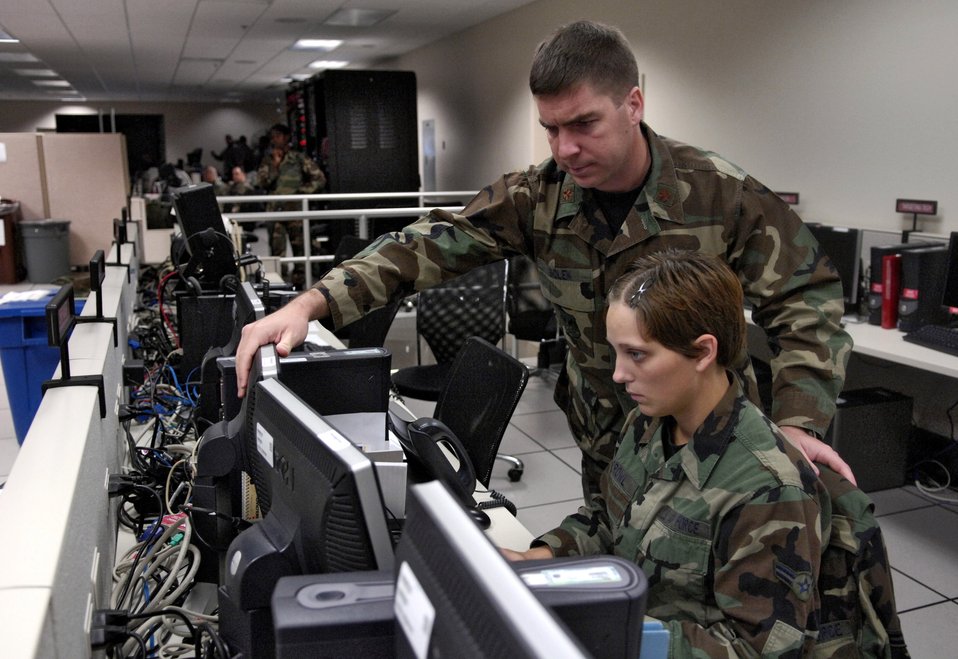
American, Japanese airmen join forces in Keen Edge '07

Maj. Todd Bolen and Airman 1st Class Whitney Sprowl correlate air operations during Exercise Keen Edge '07 Feb. 2 at Hickam Air Force Base, Hawaii. They are assigned to the 613th Air Operations Center. Keen Edge is joint bilateral exercise to increase combat readiness and interoperability with the Japan Air Self Defense Force.